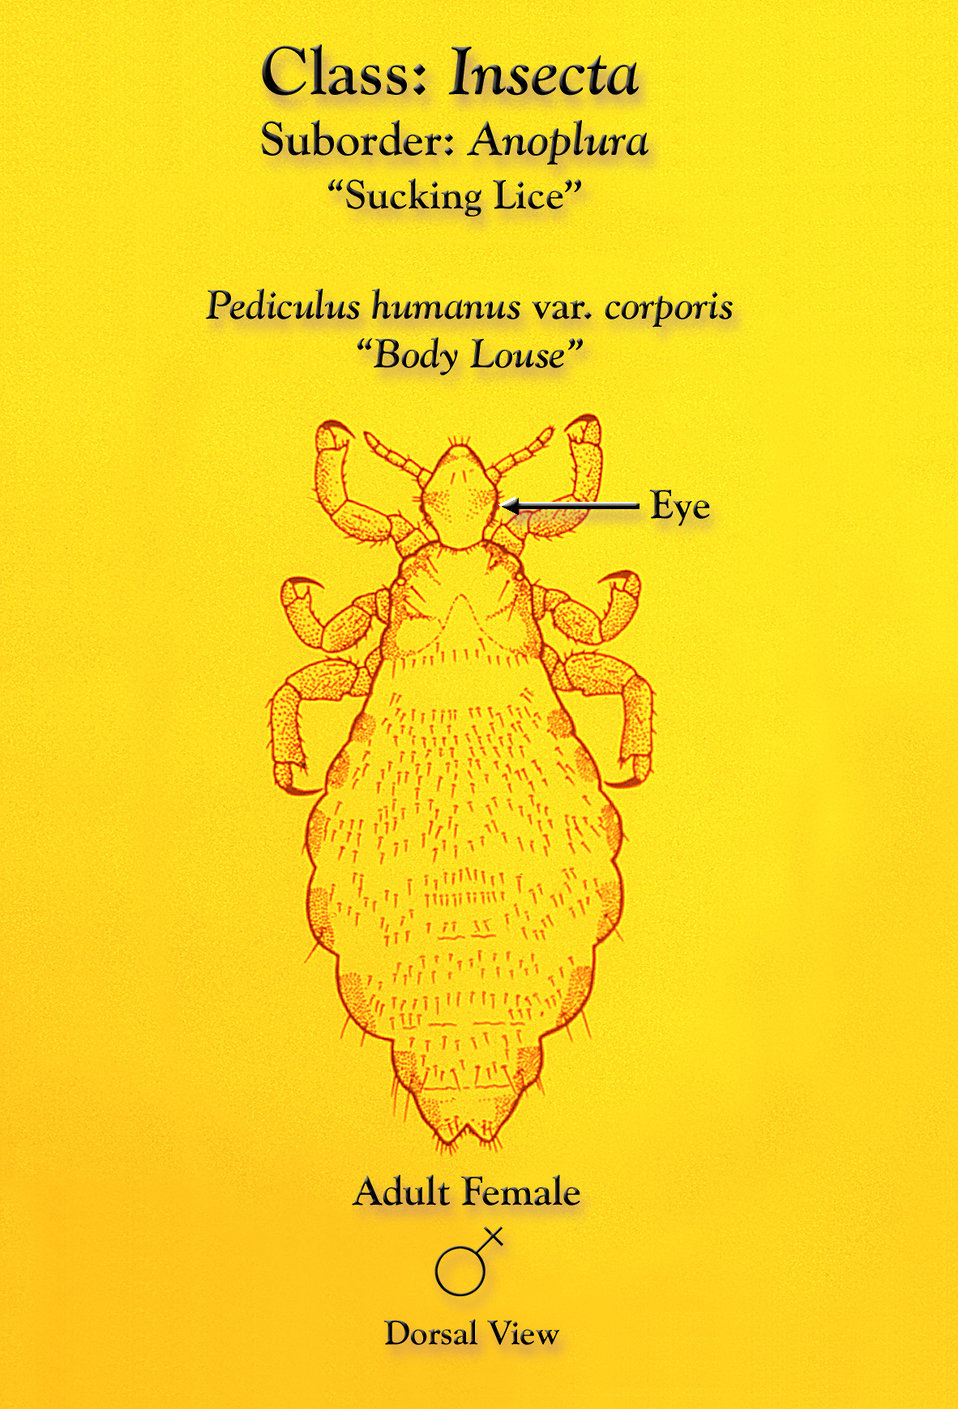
This illustration depicts a dorsal view of a female body louse, Pediculus humanus var. corporis.